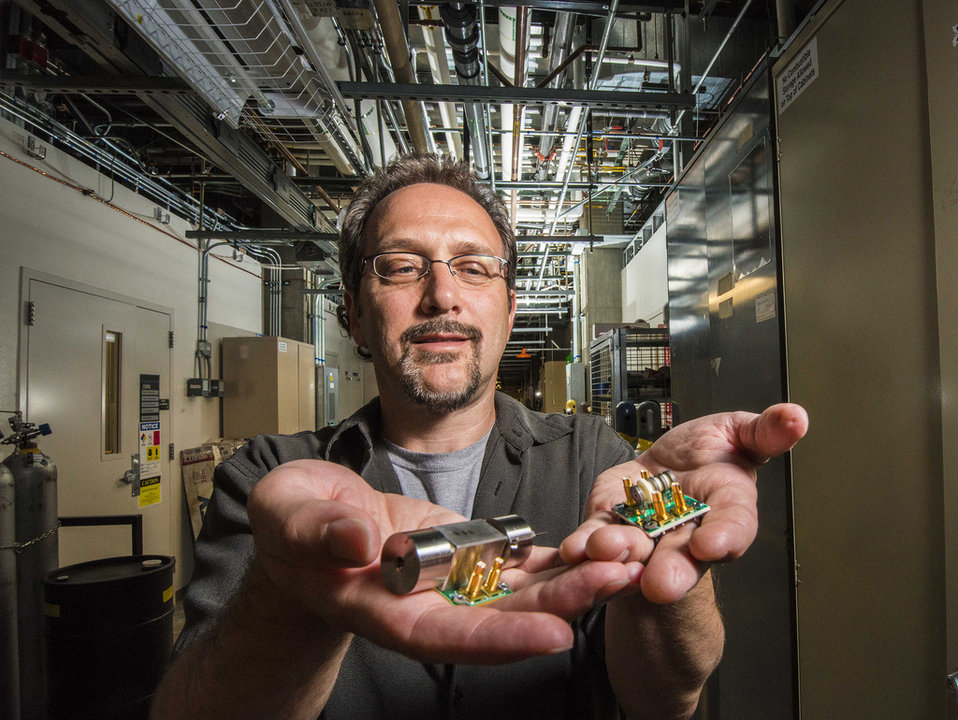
SANDIA RESEARCH DISPLAY NEW MINIATURE PULSED-DISCHARGE IONIZATION DETECTORS, OR MINI-PDIDS.

THE TINY DETECTORS HAVE BROADENED THE SCOPE OF CHEMICAL TARGETS FOR SANDIA'S MICROANALYTICAL DETECTION TECHNOLOGY TO TOXIC INDUSTRIAL CHEMICALS, BIOLOGICAL VOLATILES, GREENHOUSE GASES AND MORE.